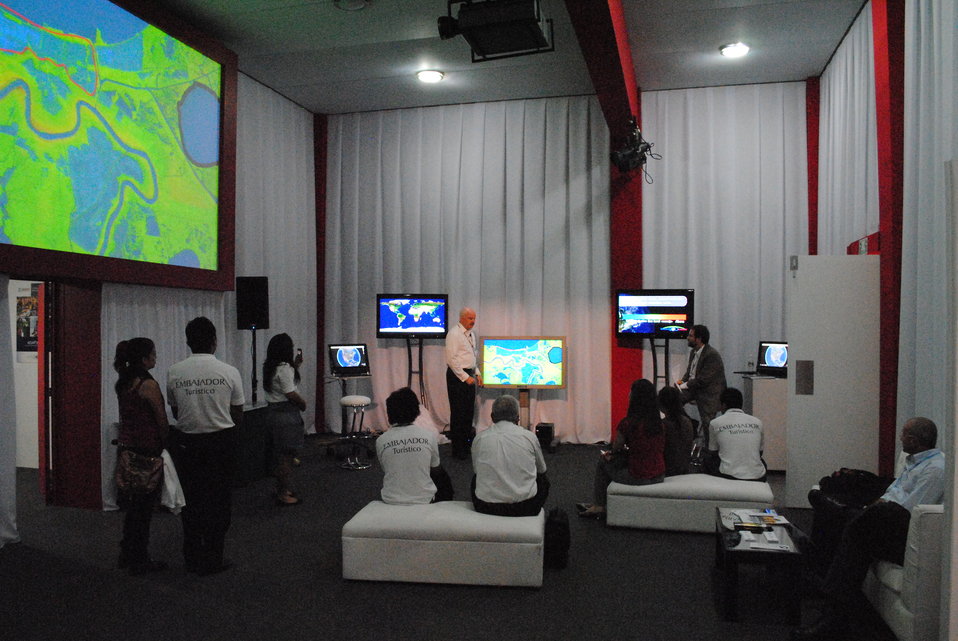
Dave Jones Presents Images of the United States From the Touch Table

Dave Jones, President and CEO of Storm Center Communications, Inc., demonstrates how climate change affects the United States on the Envirocast Vision Touch Table at the U.S. Center at COP-16 in Cancun, Mexico, on December 1, 2010.